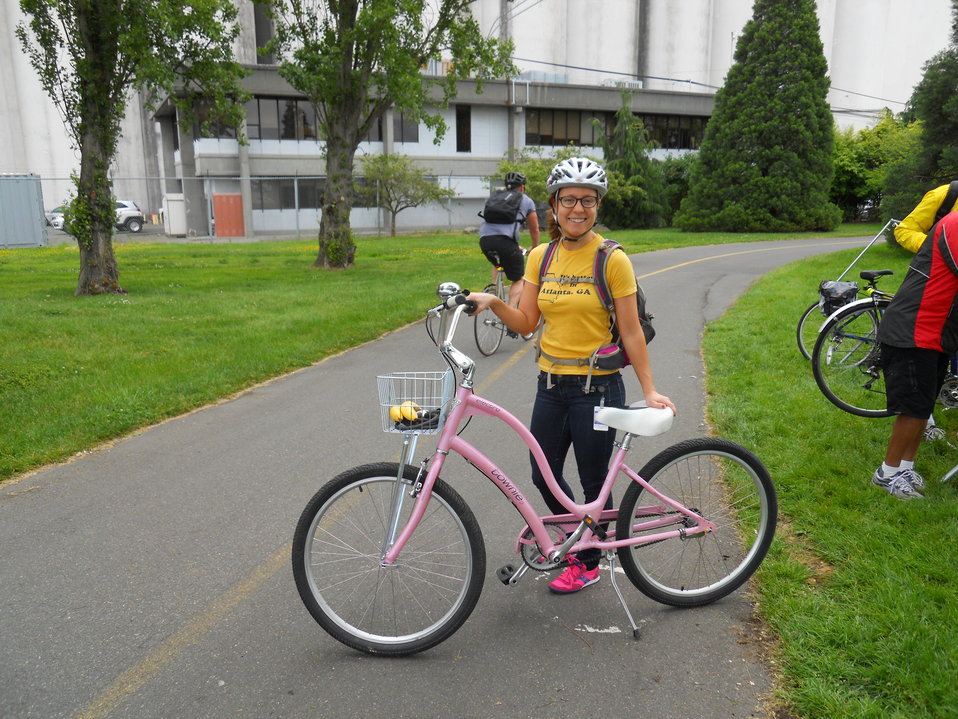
EPA Seattle Bike-To-Work Day 2014

Seattle area commuters show off their rides at EPA’s Bike-to-Work Day station.